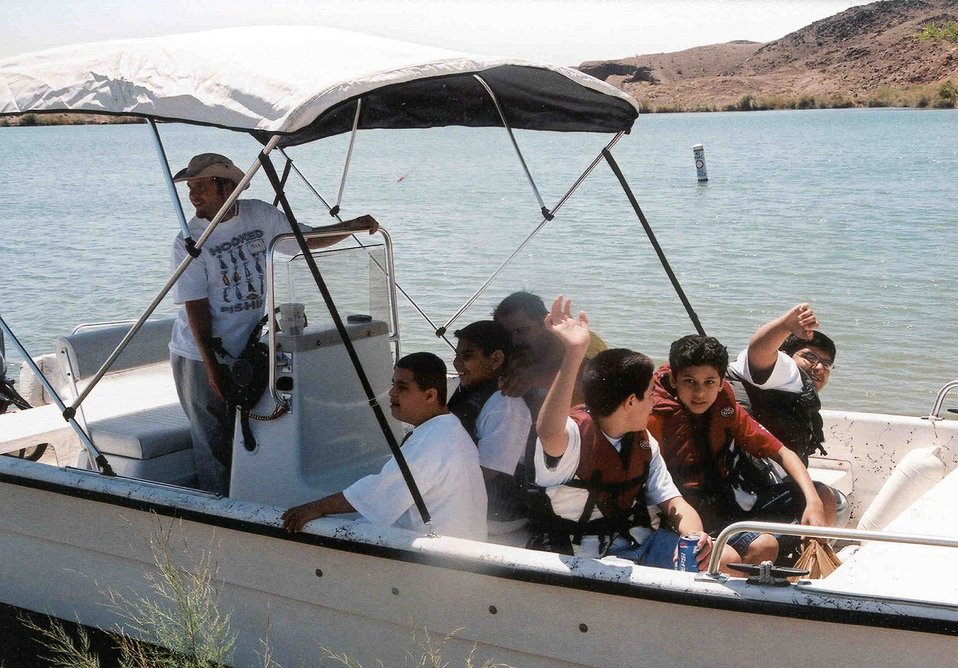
Mentally and physically challenged young people enjoying fishing and boating in celebration of National Fishing and Boating Week.